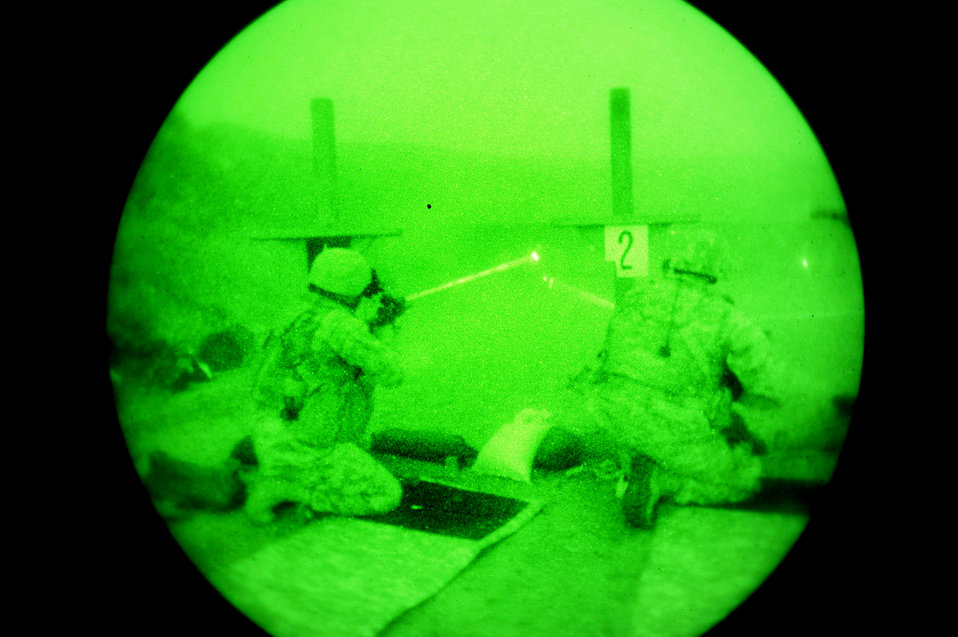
Keep your eye on the target

Airmen from the Idaho Air National Guard's 124th Fighter Wing goes through night weapons proficiency near Gowen Field in Boise, Idaho, Feb. 7, 2010. All are assigned to the Air Support Operations Squadron.